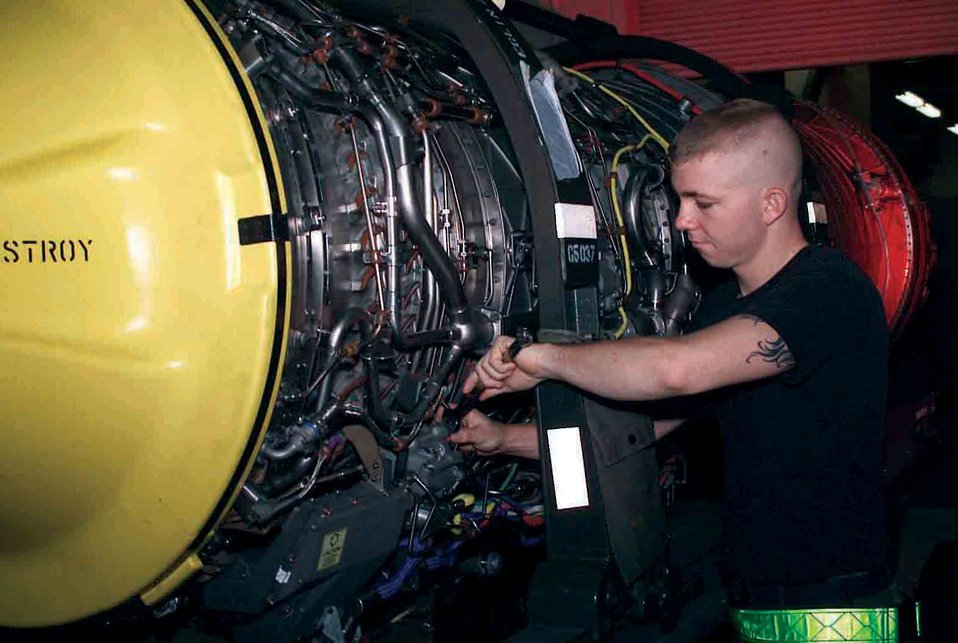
Keeping Eagles flying

EGLIN AIR FORCE BASE, Fla. -- An Airman with the 33rd Maintenance Squadron here works on an F-15 Eagle engine. Maintenance officials say that for every hour an aircraft spends in the air, it requires 25 hours of maintenance.